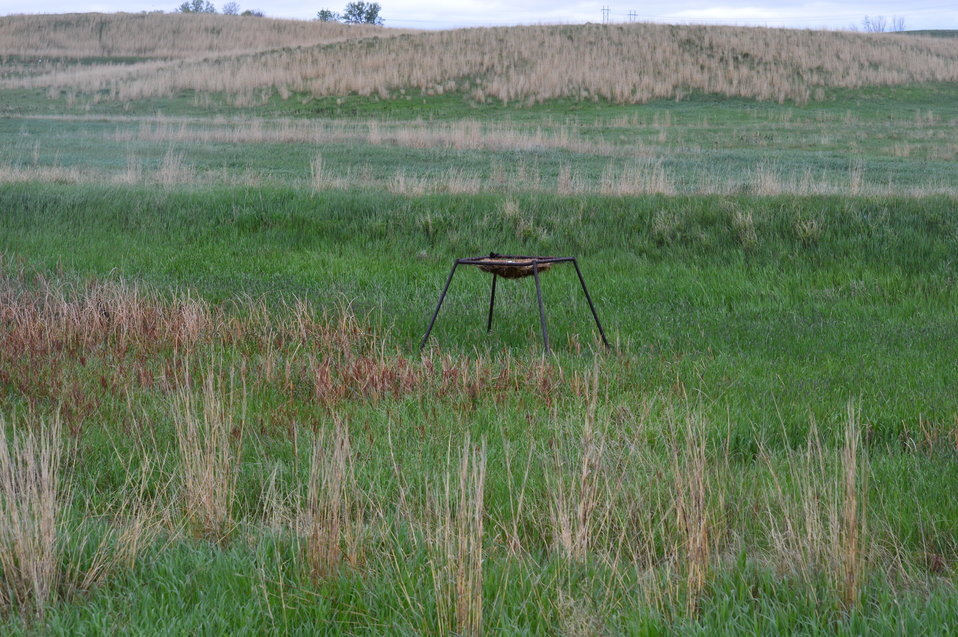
Nest Structure

Scenery and wildlife and Audubon National Wildlife Refuge in North Dakota.